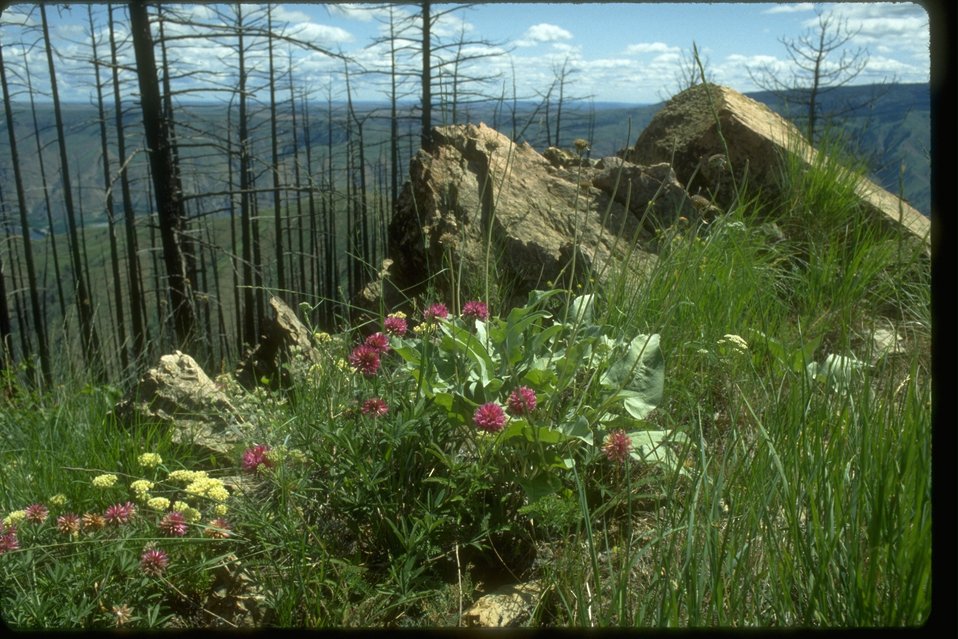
Thompson's clover (Trifolium thompson) a State-classified threatened wildflower after fire in Entiat Hills, Washington.